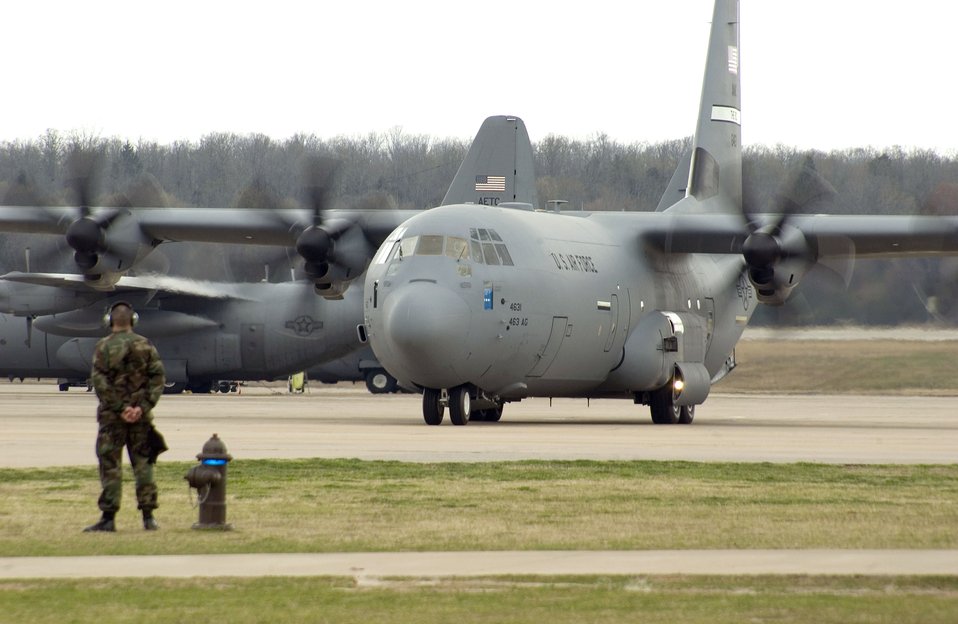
AMC, 463rd Airlift Group welcome first C-130J

General Duncan McNabb, Air Mobility Command commander, delivers a new C-130J Hercules March 13 to the 463rd Airlift Group at Little Rock Air Force Base, Ark. It is the unit's first J-model and will be used in combat operations around the world.